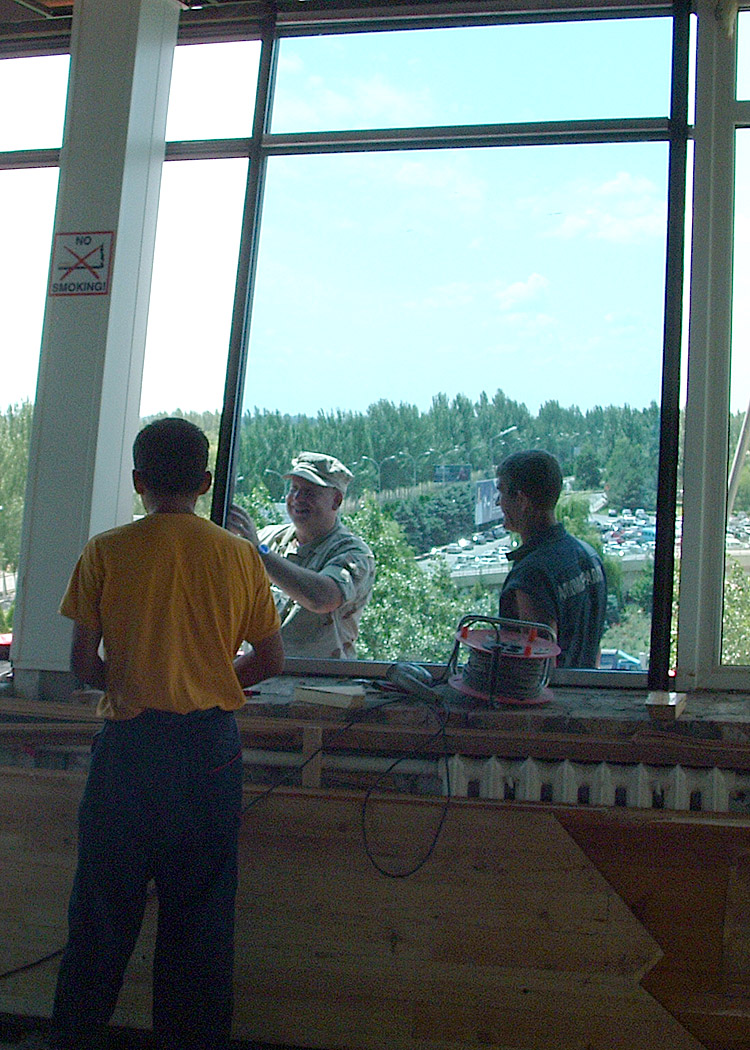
Tower gets new glass

Tech. Sgt. Brent Coons, a 376th Civil Engineer Squadron project inspector at Manas Air Base, Kyrgyzstan, checks the angle of the glass in the newly renovated air traffic control tower to make sure it is set at a specific angle designed to minimize glare and reflection.